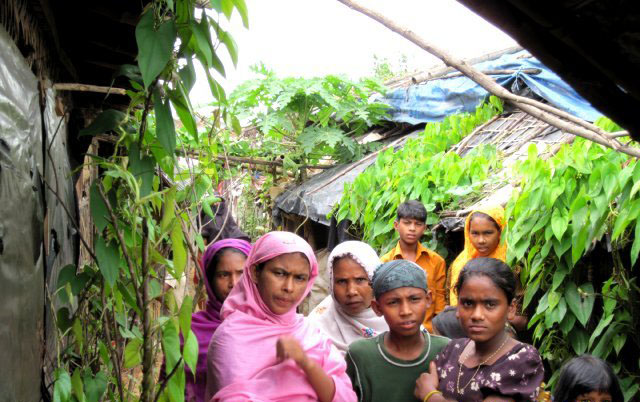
Rohingya refugee women stand by their homes in Cox's Bazar District, Bangladesh, on June 7, 2011. Conditions in this makeshift refugee camp site remain difficult -- in addition to high rates of malnutrition, residents deal with crowding and poor sanitation.